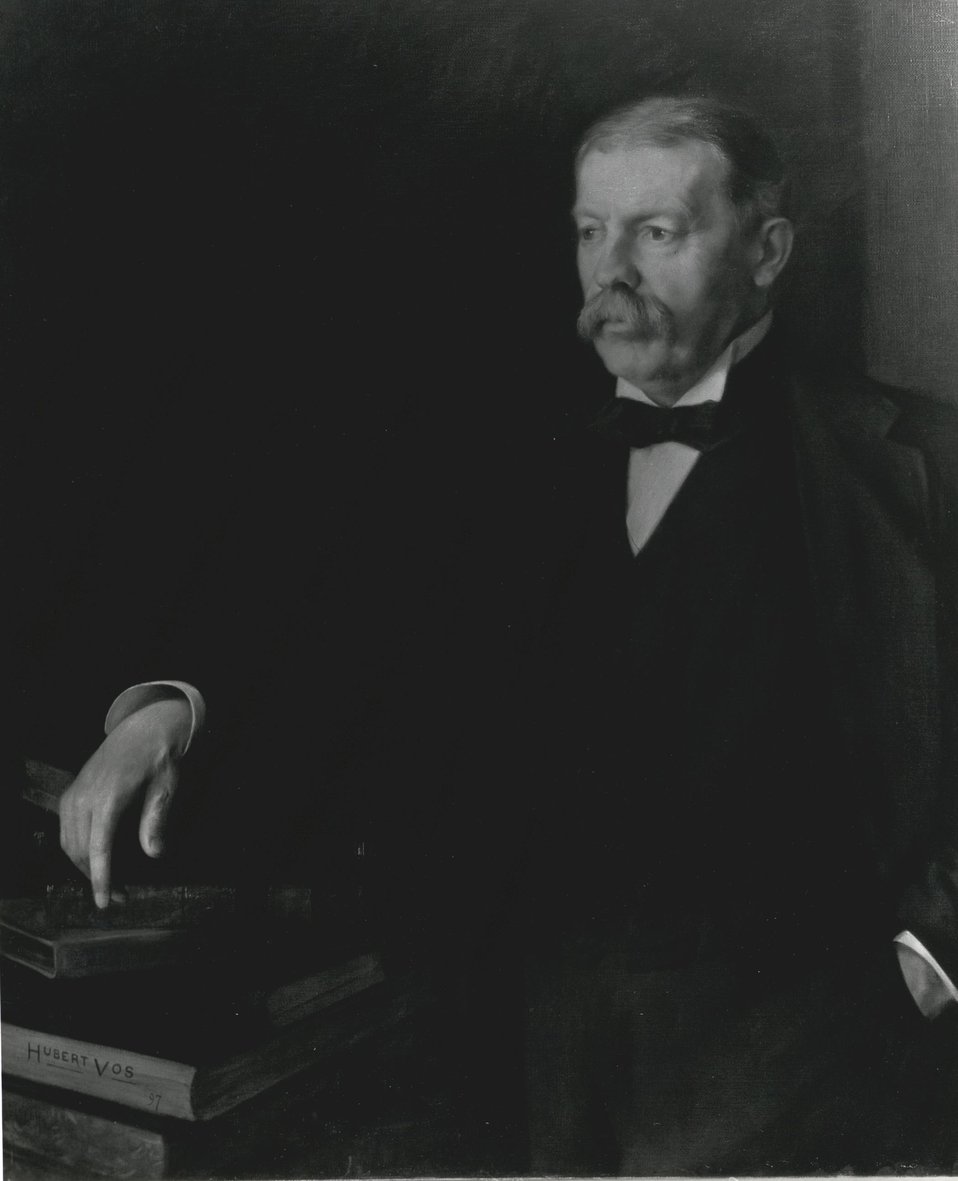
Richard Olney, U.S. Secretary of State, June 10, 1895 to March 5, 1897